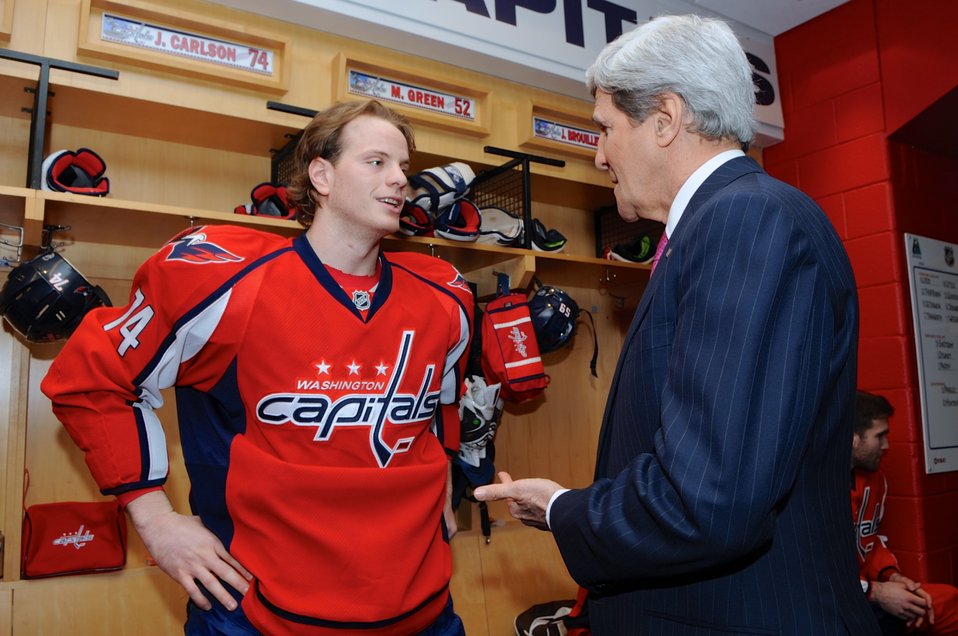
Secretary Kerry Meets Capitals Player Carlson Before Olympics Send-Off

U.S. Secretary of State John Kerry greets Washington Capitals player -- and U.S. Olympian -- John Carlson before dropping the puck and sending off Olympic hockey players as the Caps played the Winnipeg Jets at the Verizon Center in Washington, D.C., on February 6, 2014.